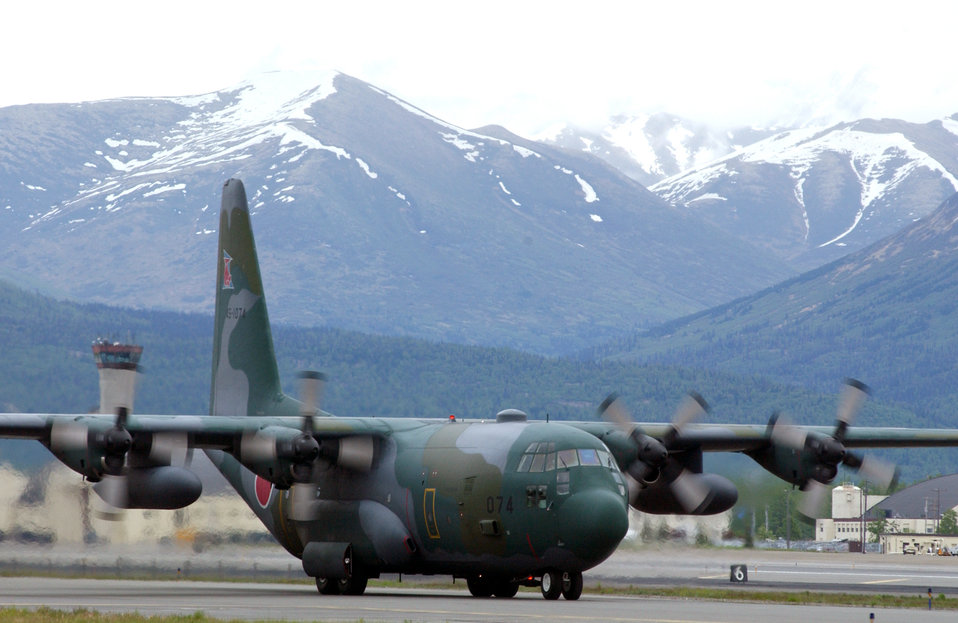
Cope Thunder

ELMENDORF AIR FORCE BASE, Alaska -- A Japanese air self-defense force C-130 taxis here after a long flight from Hokkaido, Japan. About 275 Japanese airmen are participating in Cooperative Cope Thunder, a Pacific Air Forces-sponsored air-combat training exercise set for June 5 to 20. Cope Thunder represents the first time the Japanese have deployed aircraft to North America for an exercise.